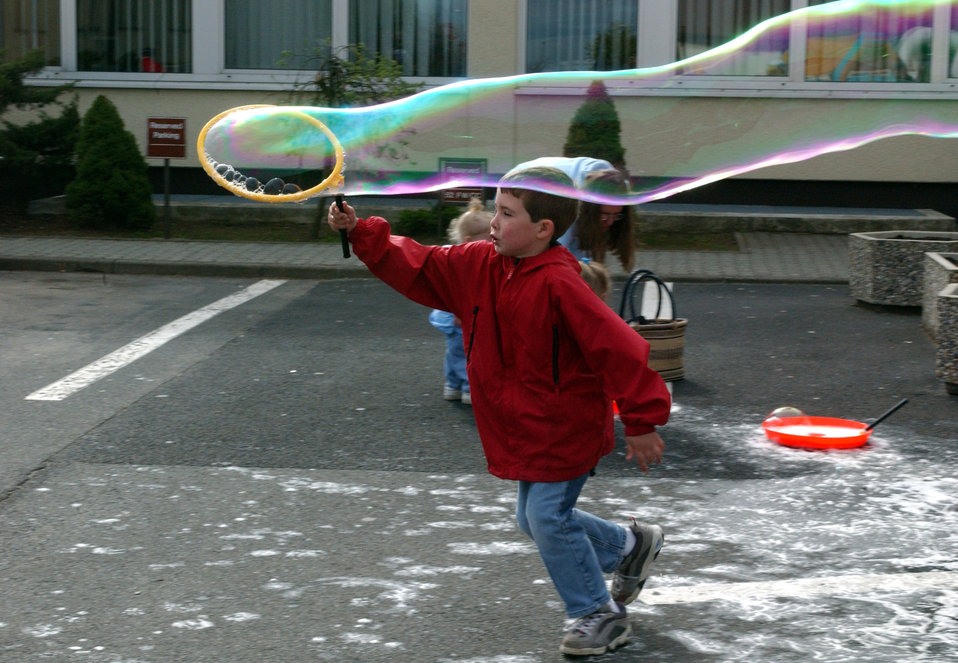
Bubble boy

SPANGDAHLEM AIR BASE, Germany -- Steven Rigby makes a giant bubble at the bubble station during the